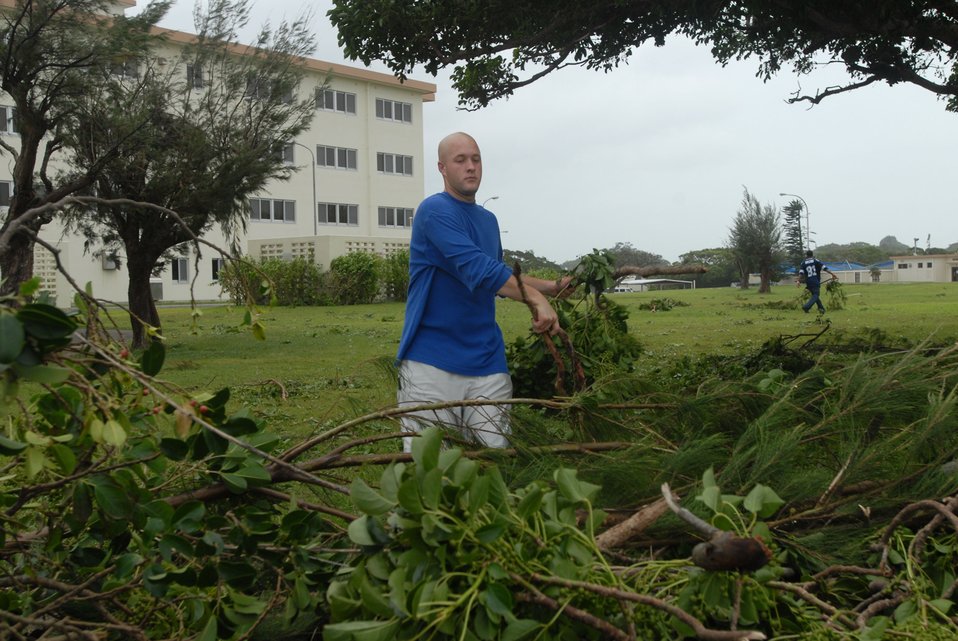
typhoon

Senior Airman Matthew Amerson piles tree branches outside his dormitory at Kadena Air Base, Japan, July 14. The branches were knocked down by Typhoon Man-Yi which brought the base 77 mph winds gusting to 105 mph. There were no injuries or significant damages to base structures. The typhoon was the strongest to hit the base since 2003. Airman Amerson is assigned to the 18th Logistics Readiness Squadron.